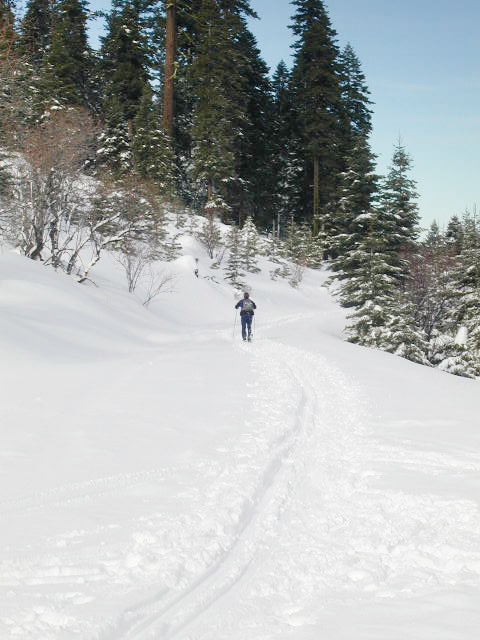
Buck Prairie Cross Country Ski Trail system consists of approximately 17 miles of interconnected trails on public and private lands on the ridges just west of Howard Prairie and Hyatt Reservoirs.